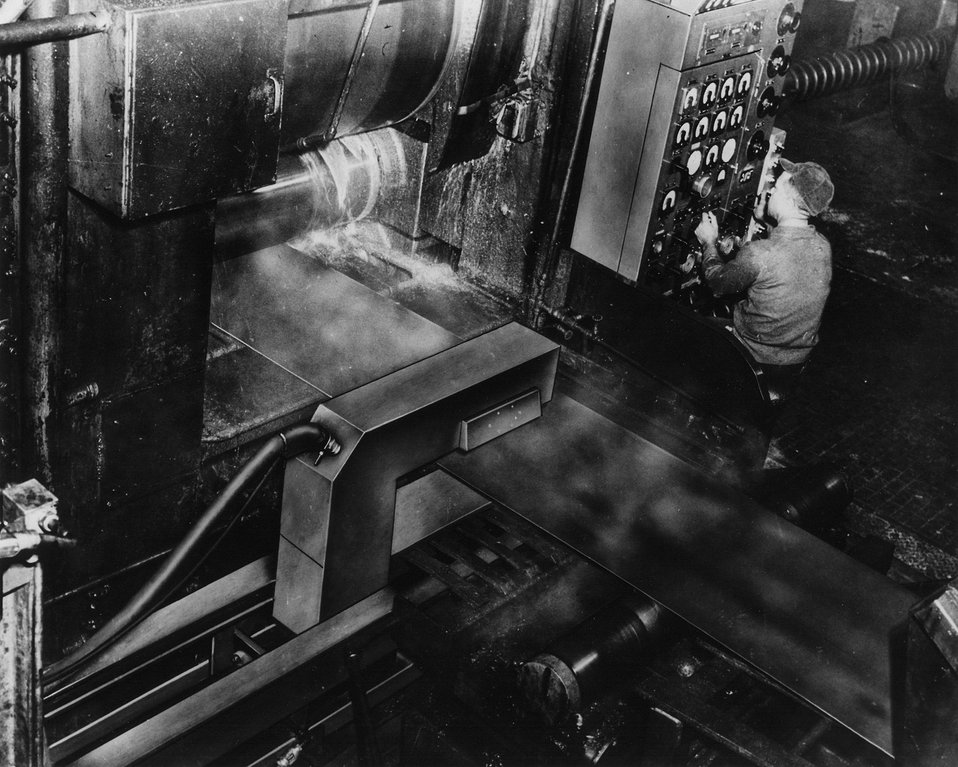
Beta Gauge being used to measure and monitor thickness of sheets of steel at the Steel Division, Ford Motor Company.